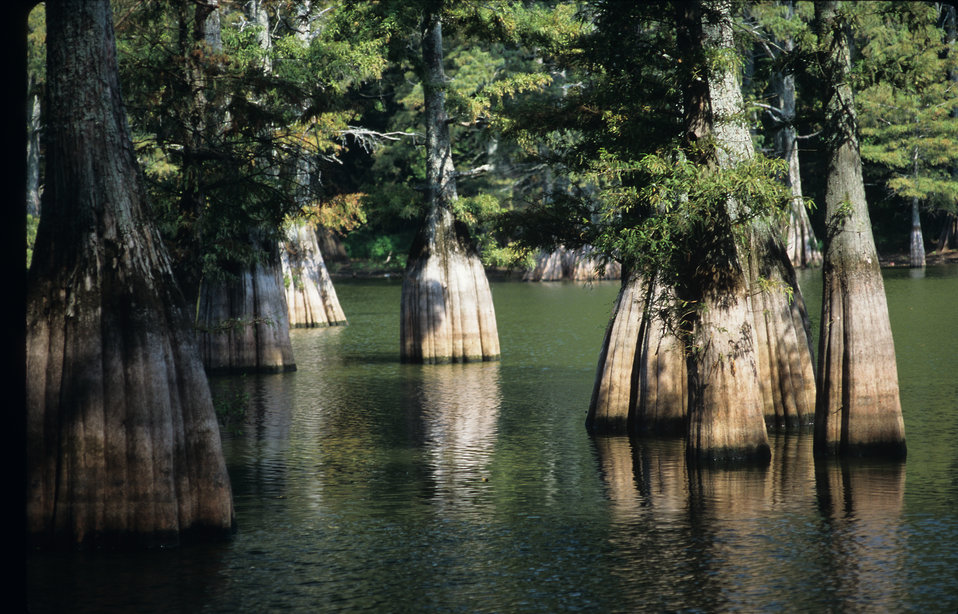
The sun shines through the trees at the Big Thicket National Preserve in late August 1996. The preserve is located just north of Houston and Beaumont, TX and has historically been home to dense woodlands in the state. The Big Thicket was mostly uninhabited until heavy settlement from the U.S. began in the mid-19th century, and was even used as a refuge by runaway slaves and other fugitives.